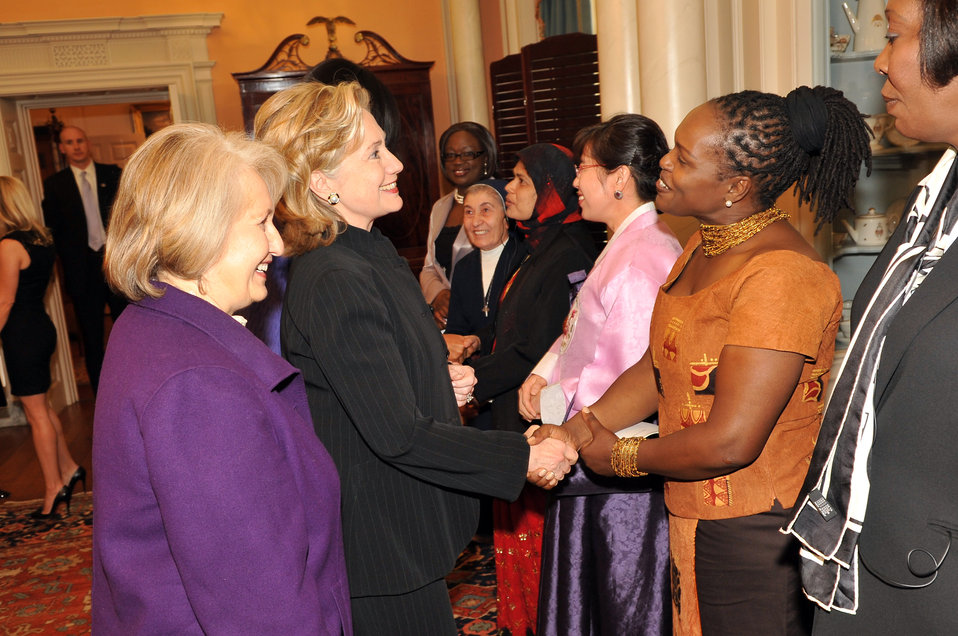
Secretary Clinton Shakes Hands With Honoree Ann Njogue

U.S. Secretary of State Hillary Rodham Clinton shakes hands with Honoree Ann Njogue of Kenya at the 2010 International Women of Courage at the U.S. Department of State, Washington, D.C. March 10, 2010.